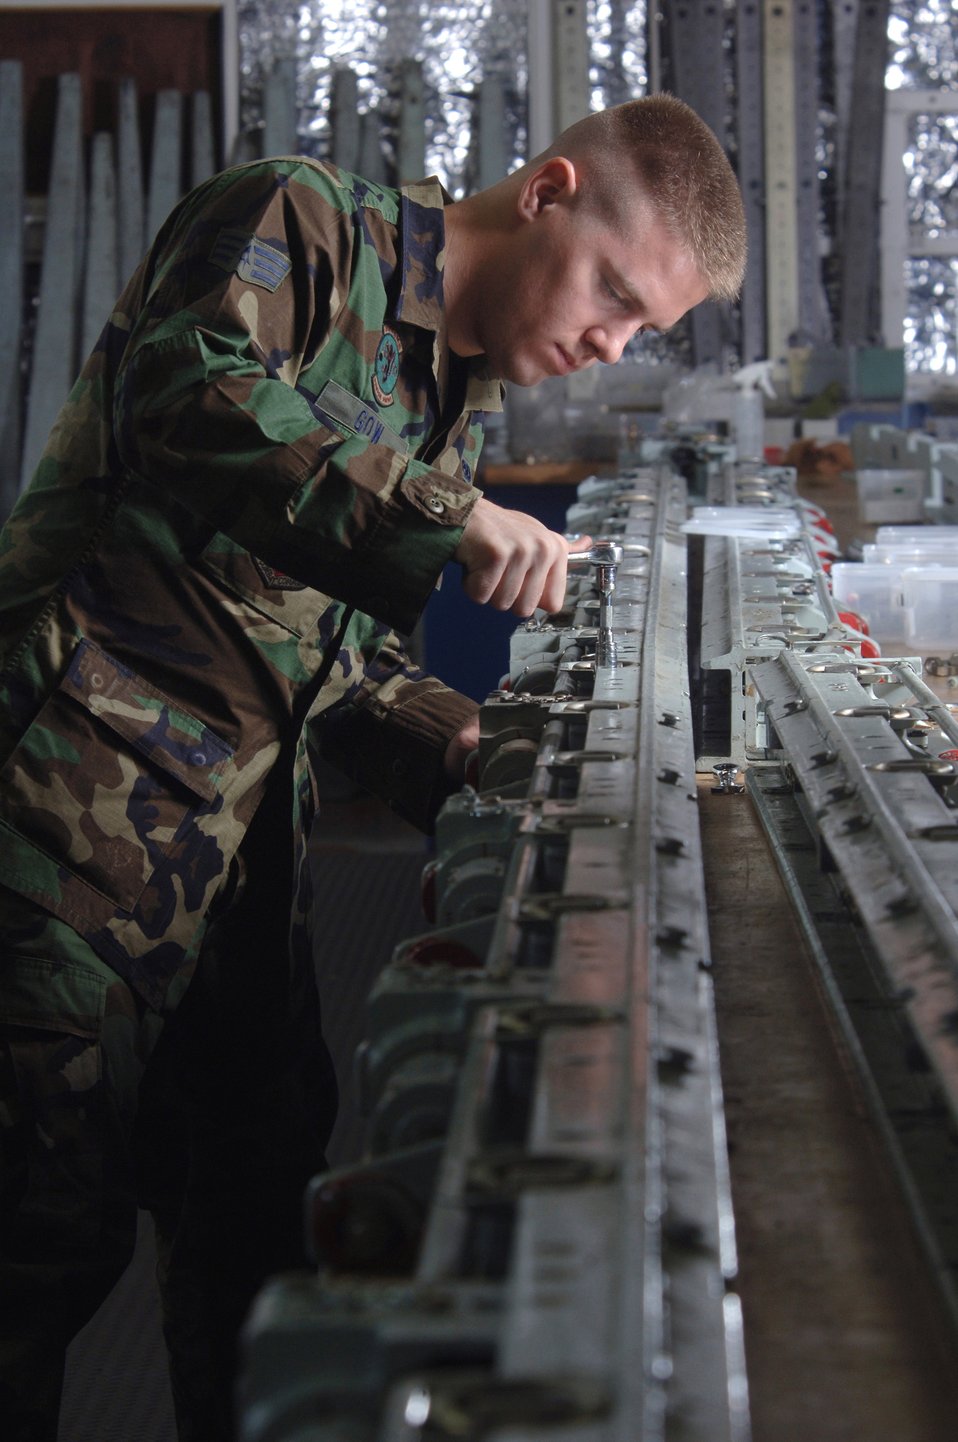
Rail system check-up

Senior Airman Christopher Gow checks a C-130 Hercules cargo rail system for damage and corrosion during an inspection at Yokota Air Base, Japan, on Wednesday, May 3, 2006. The cargo handling system is inspected at least twice a year. Airman Gow is a C-130 crew chief with the 374th Aircraft Maintenance Squadron.